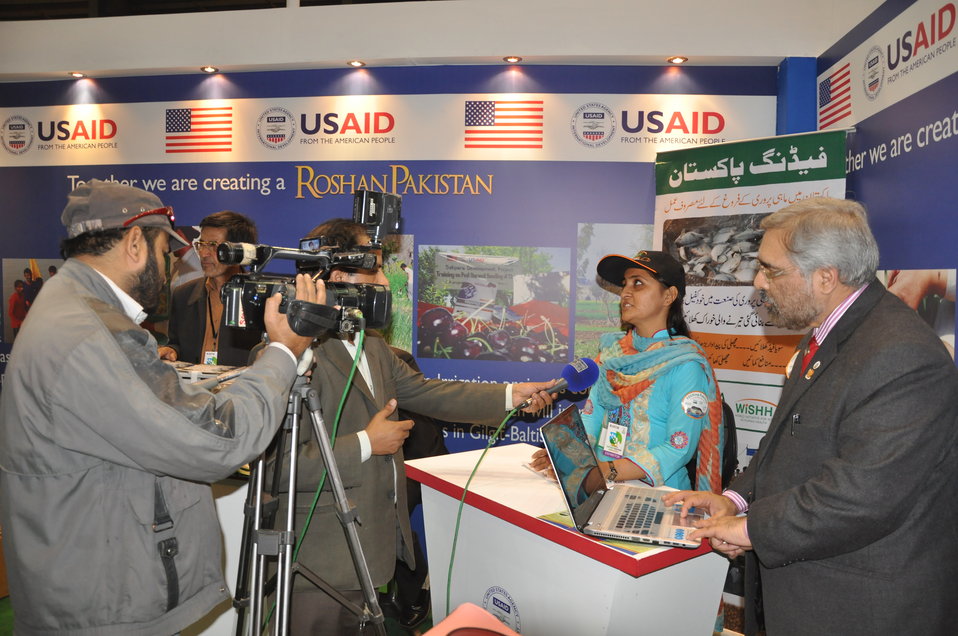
FEEDing Pakistan (Promoting Aquaculure Sector)

SAMA TV interviewed the Aquaculture Associate of ASA/WISHH/PK about the Tilapia culture and its production 3.00 - 7.5 MT per acre.